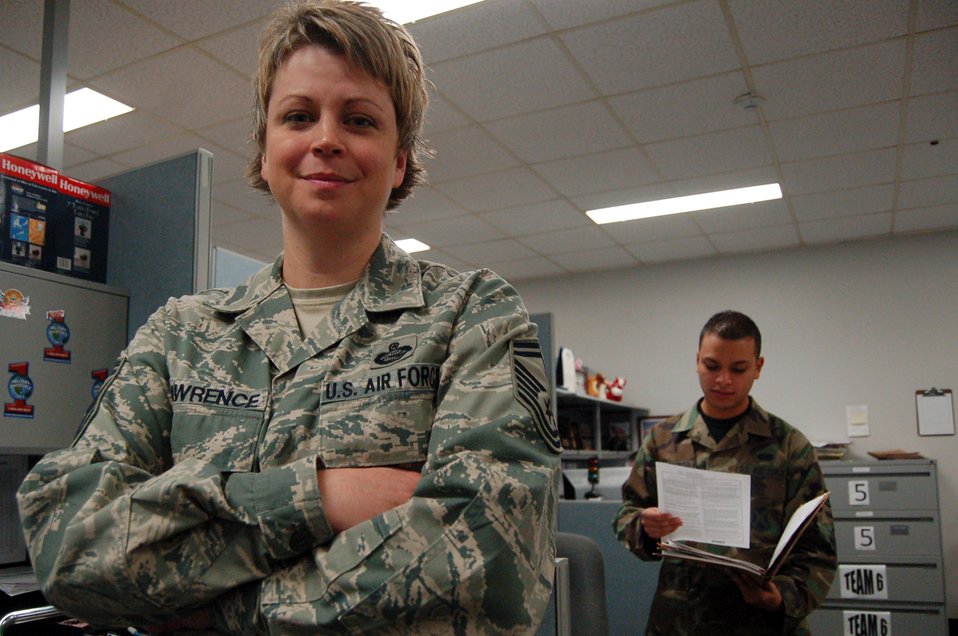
Readying the strategic reserve

Senior Master Sgt. Patricia Lawrence, Lackland's base individual mobilization augmentee administrator, ensures Lackland's individual mobilization augmentees are ready to serve as strategic reserves. She also educates Lackland units on their responsibilities to their IMAs.